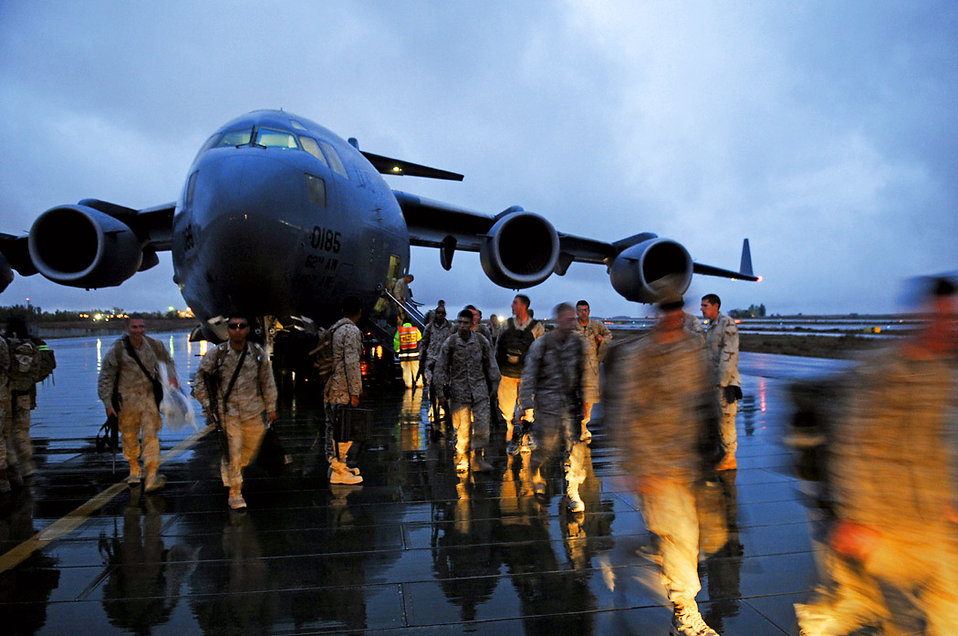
We're here!

Members from the 24th Marine Expeditionary Unit step off of a C-17 Globemaster III Oct. 13 at Manas Air Base, Kyrgyzstan.